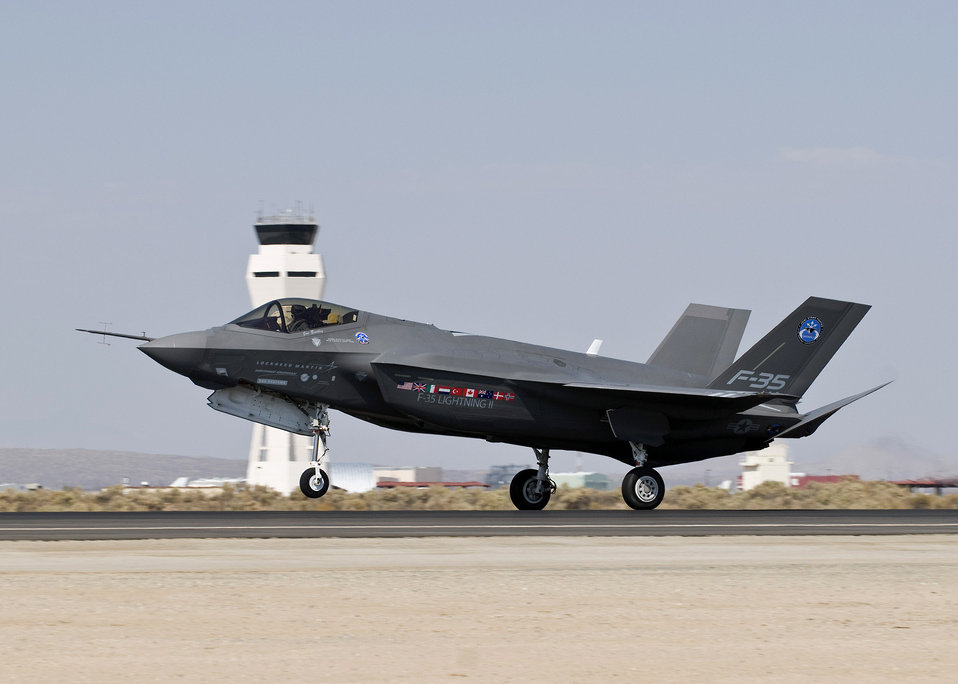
F-35 arrives at Edwards

An F-35 Joint Strike Fighter, numbered AA-1, taxis past the control tower on Edwards Air Force Base, Calif., Oct. 1. It marked the first time the aircraft arrived here. The F-35 will perform a series of tests, including airstart and noise testing. The aircraft flew in from Naval Air Station Fort Worth, Texas. The F-35 is a stealthy, single-engine, supersonic multi-role fighter that will replace a variety of aging fighter and strike aircraft for the Air Force, Navy, Marine Corps and allied defense forces. The A-10 Thunderbolt, F-16 Fighting Falcon, F/A-18 Hornet and A/V-8 Harrier are among the jets it will replace. Once fielded, it will complement the fleet of F-22 Raptor air-supremacy fighters that are already operational.